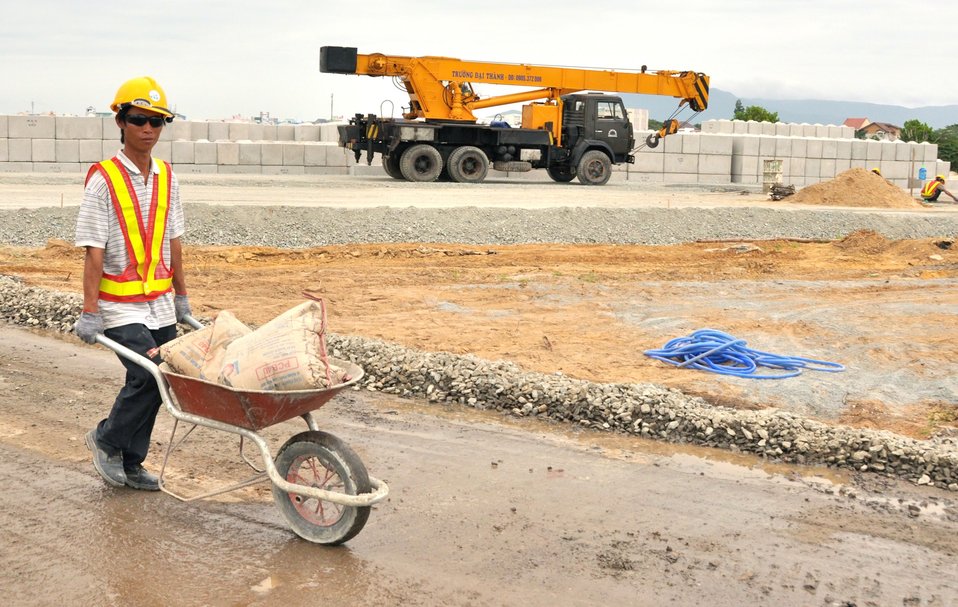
Site Preparation for Environmental Remediation of Dioxin Contamination at Danang Airport

Danang Airport, January 22, 2013